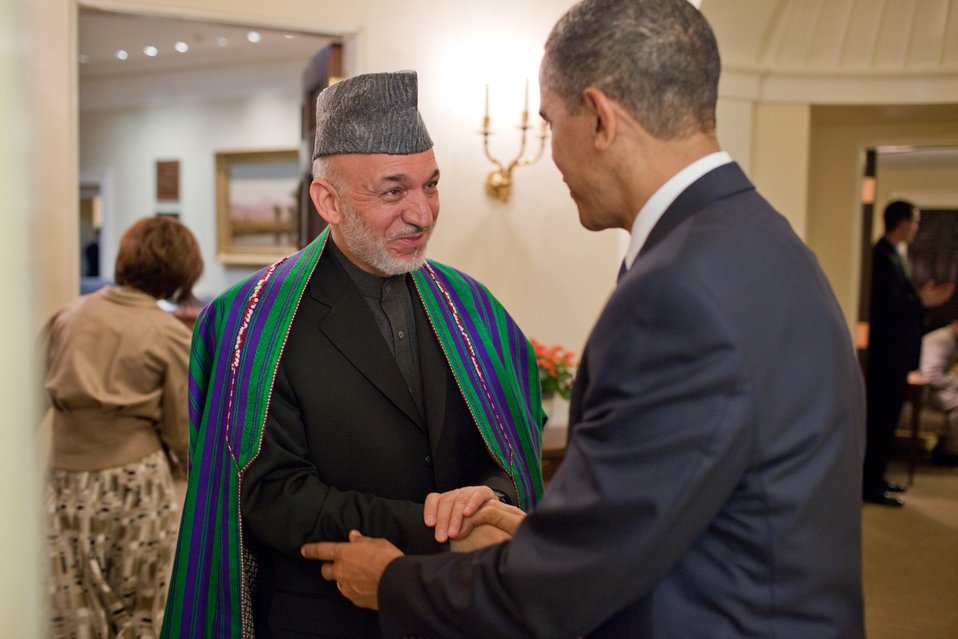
President Obama and Afghan President Karzai Shake Hands

President Barack Obama greets President Hamid Karzai of Afghanistan in a West Wing hallway outside of the Oval Office in the White House in Washington, D.C., May 12, 2010. [White House Photo], May 12, 2010.